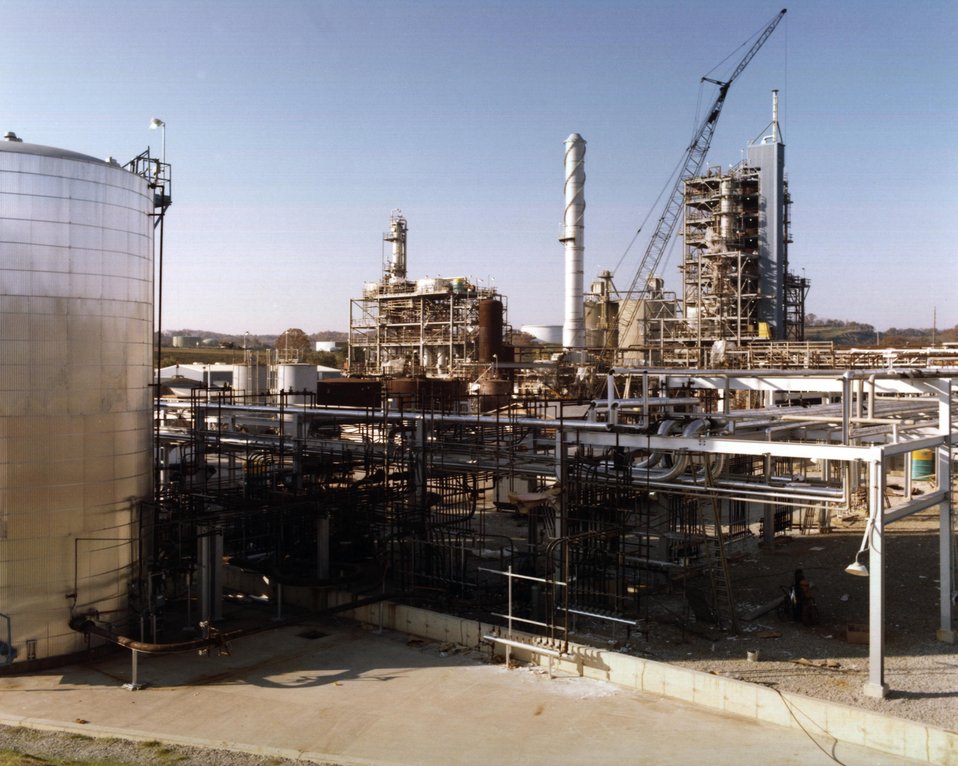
WASTE OIL RECOVERY AND DE-ASHING UNITS AT THE PARTIALLY- CONSTRUCTED H-COAL 600-TONS-PER-DAY PILOT PLANT.